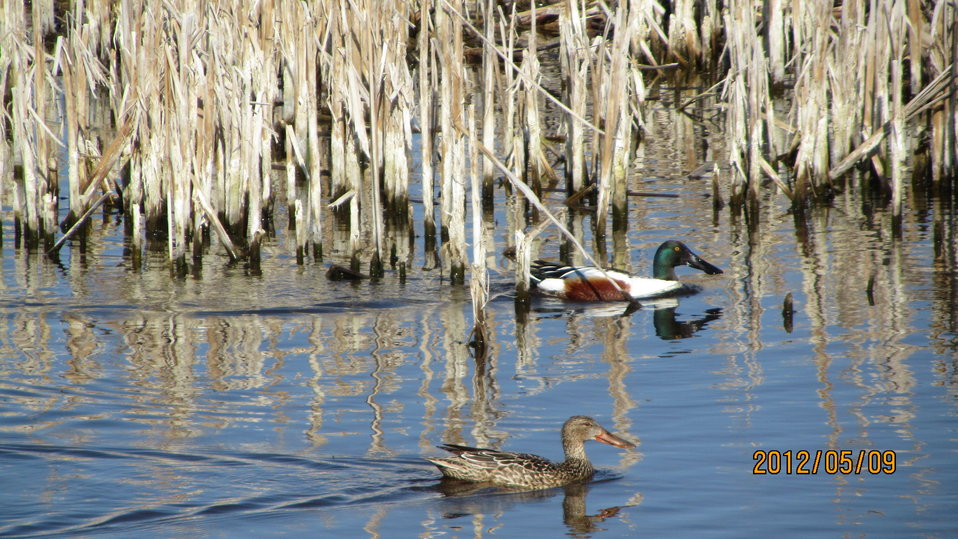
Northern Shoveler Hen and Drake

The lands of the refuge were established to protect and provide habitat for migratory birds that cross State lines and international borders and are by law a Federal trust responsibility.
The refuge is of great value to waterfowl and shorebirds, as well as other migrating water-dependent bird species, because of the diversity of wetland and upland habitats that provide for the diverse life cycle needs of these species.